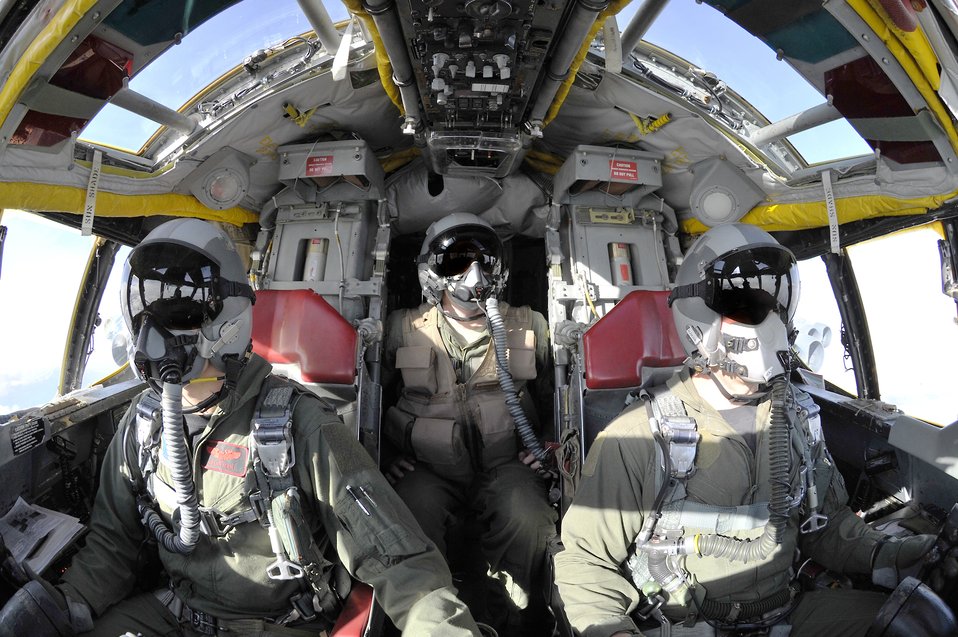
Looking for trouble

An aircrew assigned to the 96th Bomb Squadron at Barksdale Air Force Base, La., flies a Red Flag-Alaska mission in a B-52H Stratofortress, April 29, 2010, at Eielson AFB, Alaska.